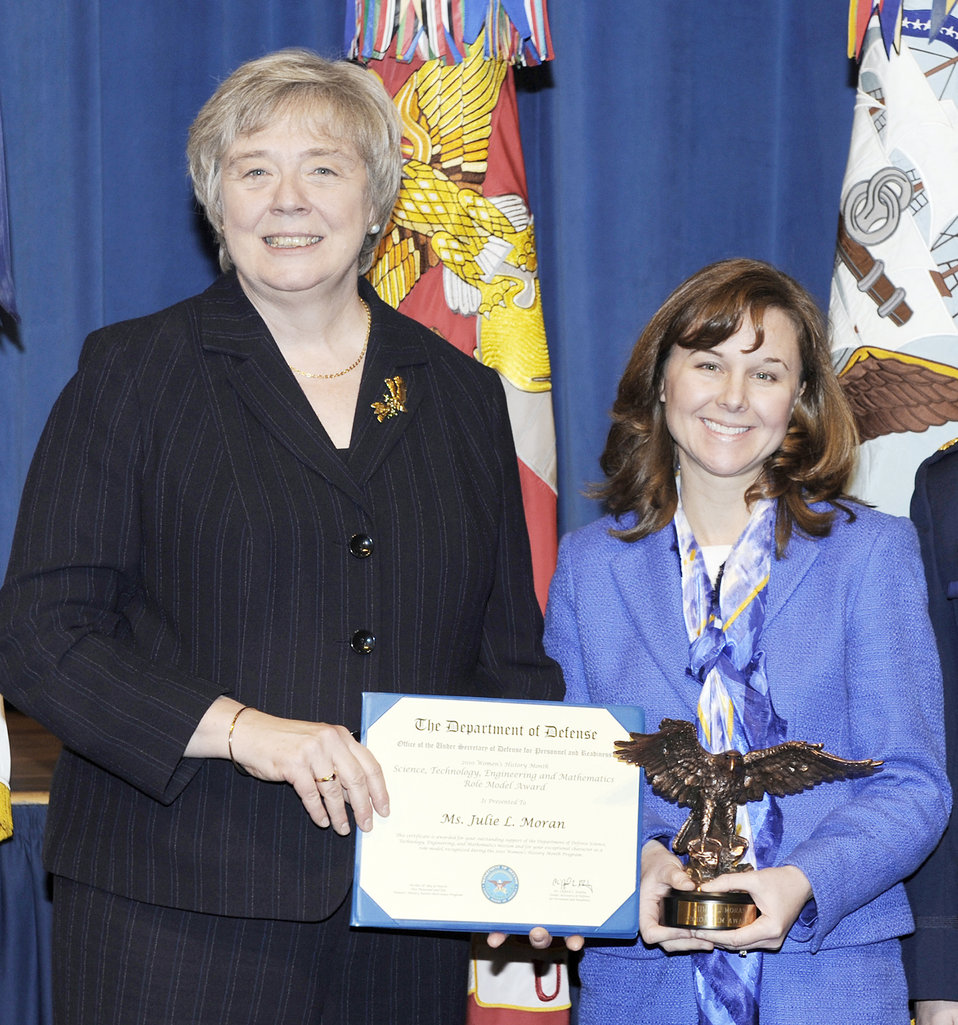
STEM Award

Gail McGinn, deputy undersecretary of defense for plans, presents the 2010 Science, Technology, Engineering and Math Role Model Award to Julie Moran during a Pentagon ceremony March 18, 2010.